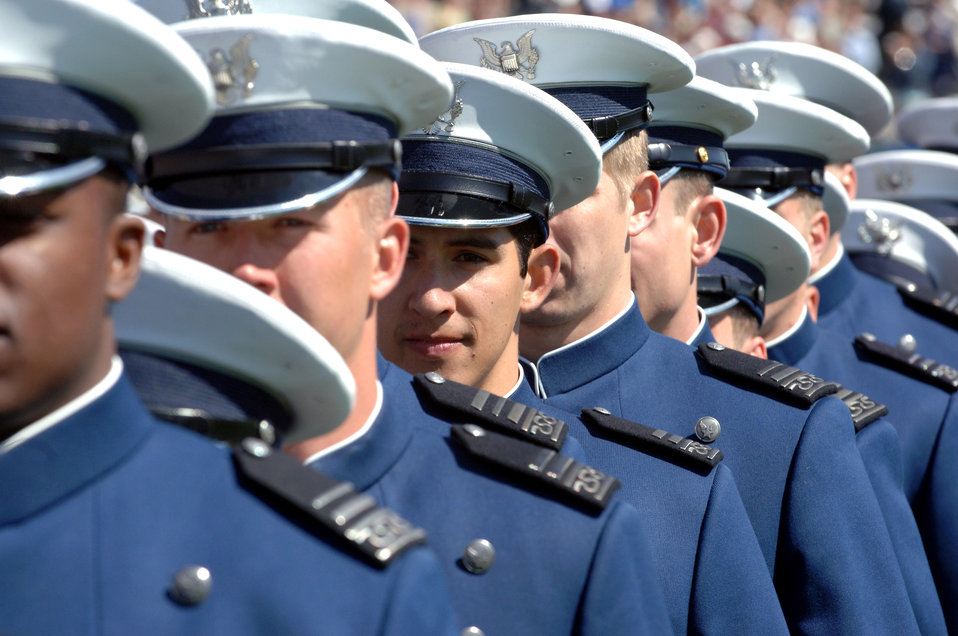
From cadet to lieutenant

First class cadets from the U.S. Air Force Academy line up at the beginning of their commencement exercise to receive their degrees and assume the duties of the Air Force's newest second lieutenants May 30 in Colorado. The academy graduated 977 members of the class of 2007.